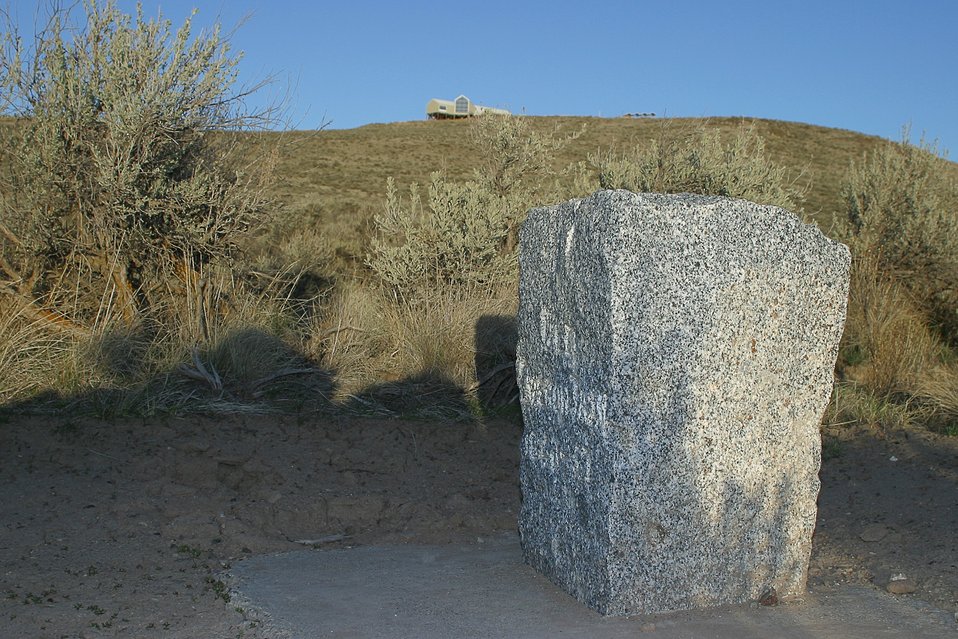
Oregon Trail ruts below the National Historic Oregon Trail Interpretive Center.